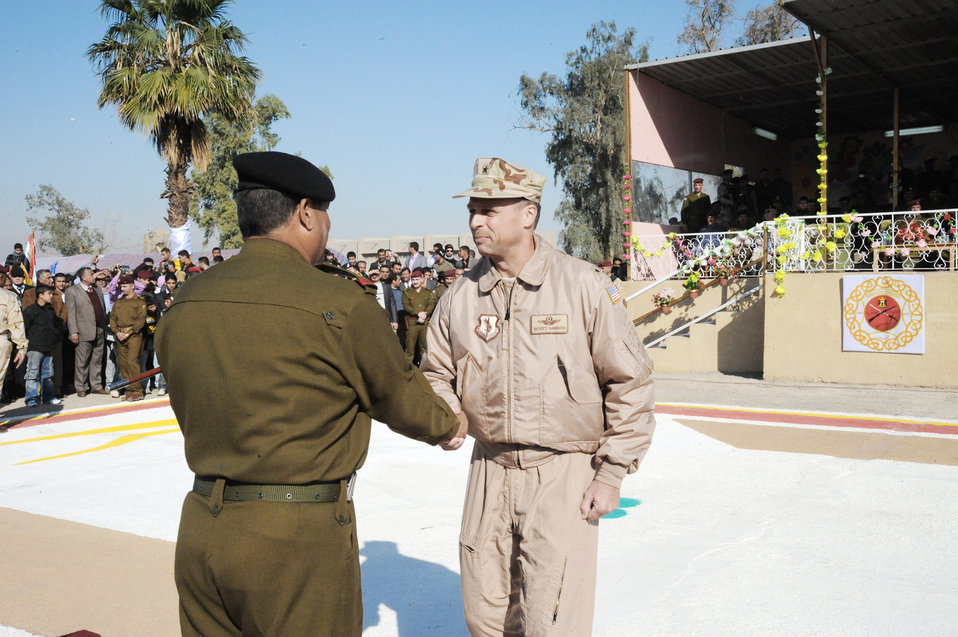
Iraqi air force graduates 247 cadets

Iraqi staff Gen. Aboud Ganbar salutes cadets during a pass in review at an Iraqi air force officer graduation ceremony Jan. 10, 2010, at the Iraqi Military Academy-Rustamiyah, Iraq. General Ganbar is the deputy of the Iraqi army chief of staff for operations.